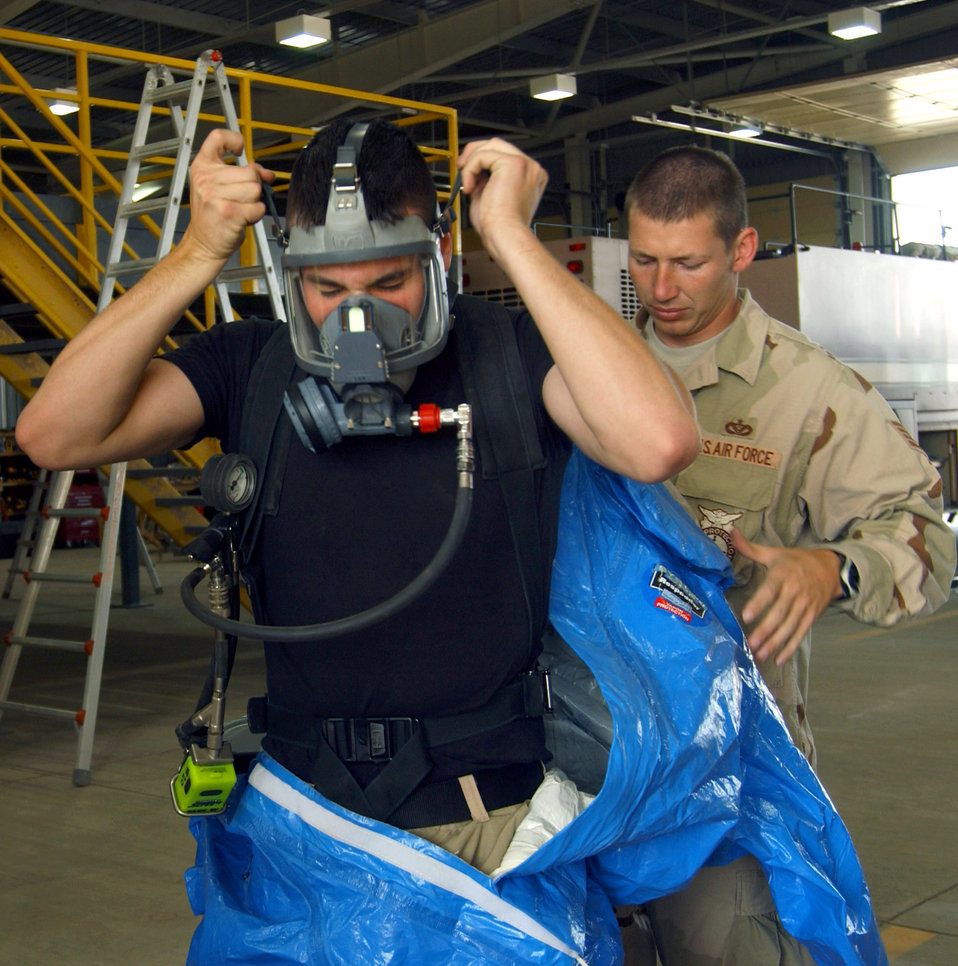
Hazmat training in Iraq

Staff Sgt. Ryan Roxburgh helps Airman 1st Class Glenn Rodgers put on a blue Level A suit to simulate a chemically contaminated firefighter during a training exercise June 5 at Balad Air Base, Iraq. The firefighters set up a hazardous-material decontamination line and practiced so that they would be able to quickly respond to any real-world threat within 10 minutes. The Airmen are firefighters with the 332nd Expeditionary Civil Engineer Squadron Fire and Emergency Services Flight.